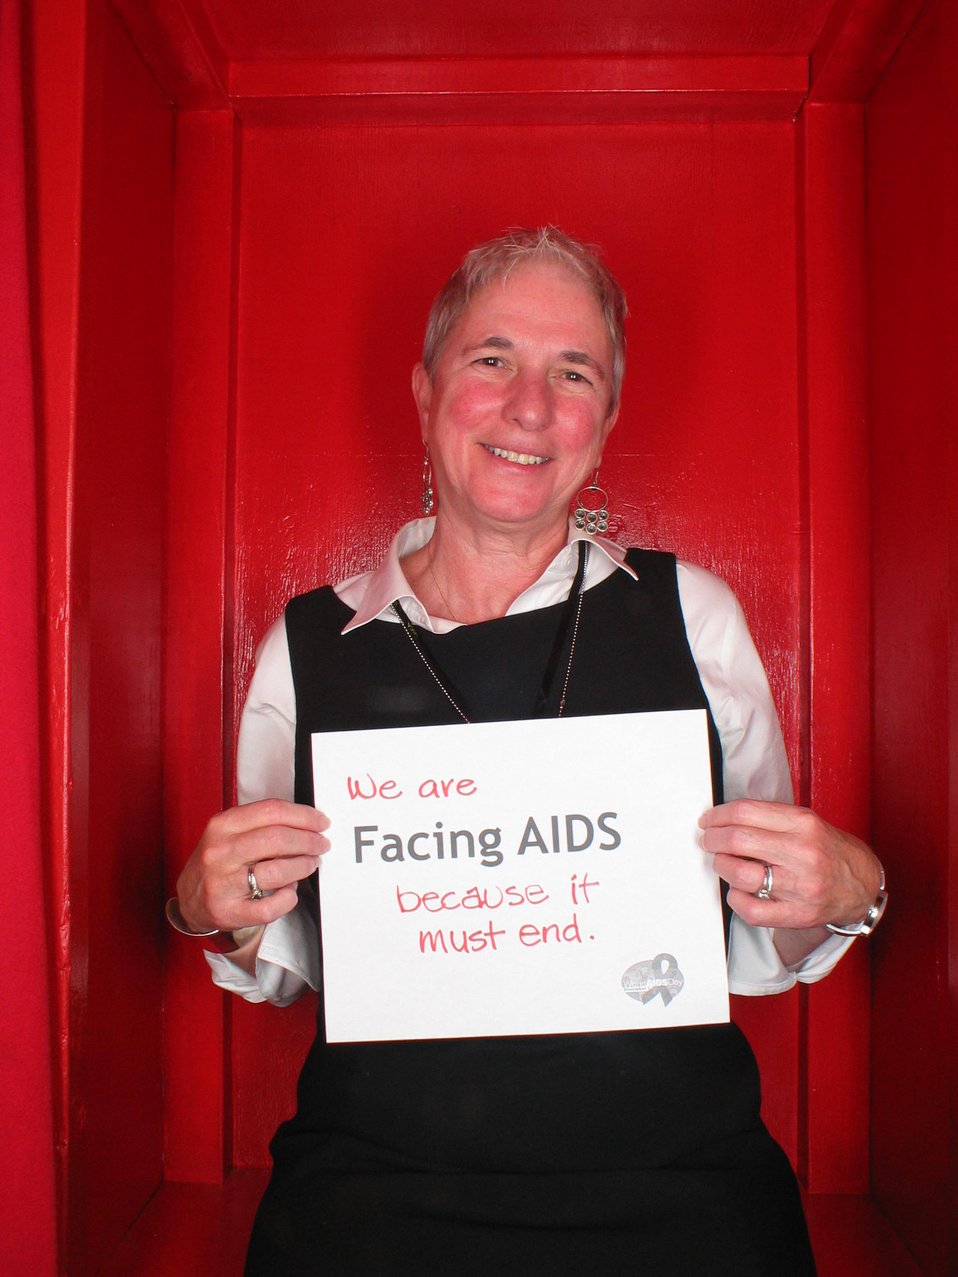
We are Facing AIDS because it must end.